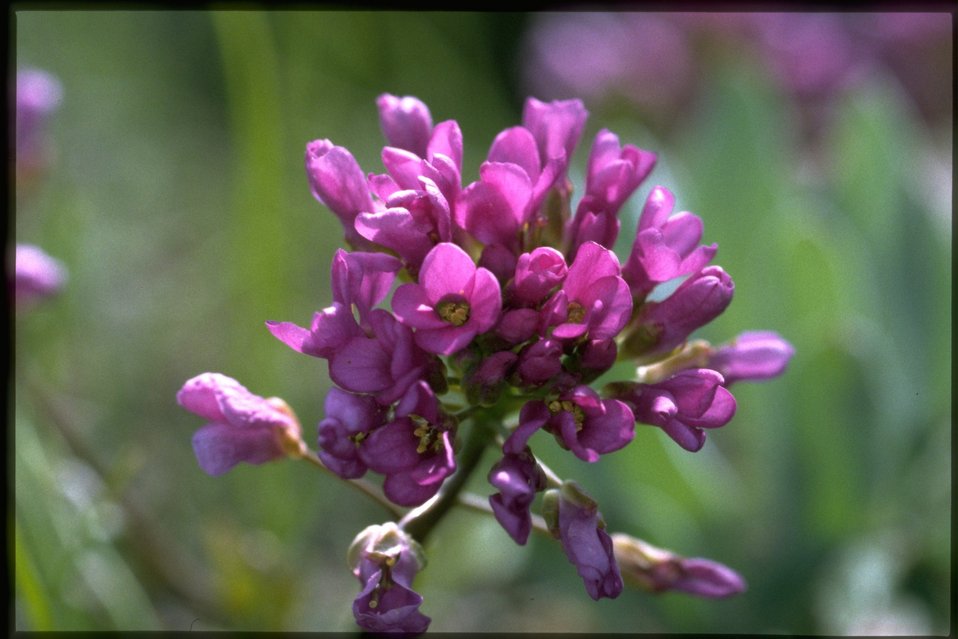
Closeup shot of daggerpod, Phoenicaulis Cheiranthoides, wildflowers.